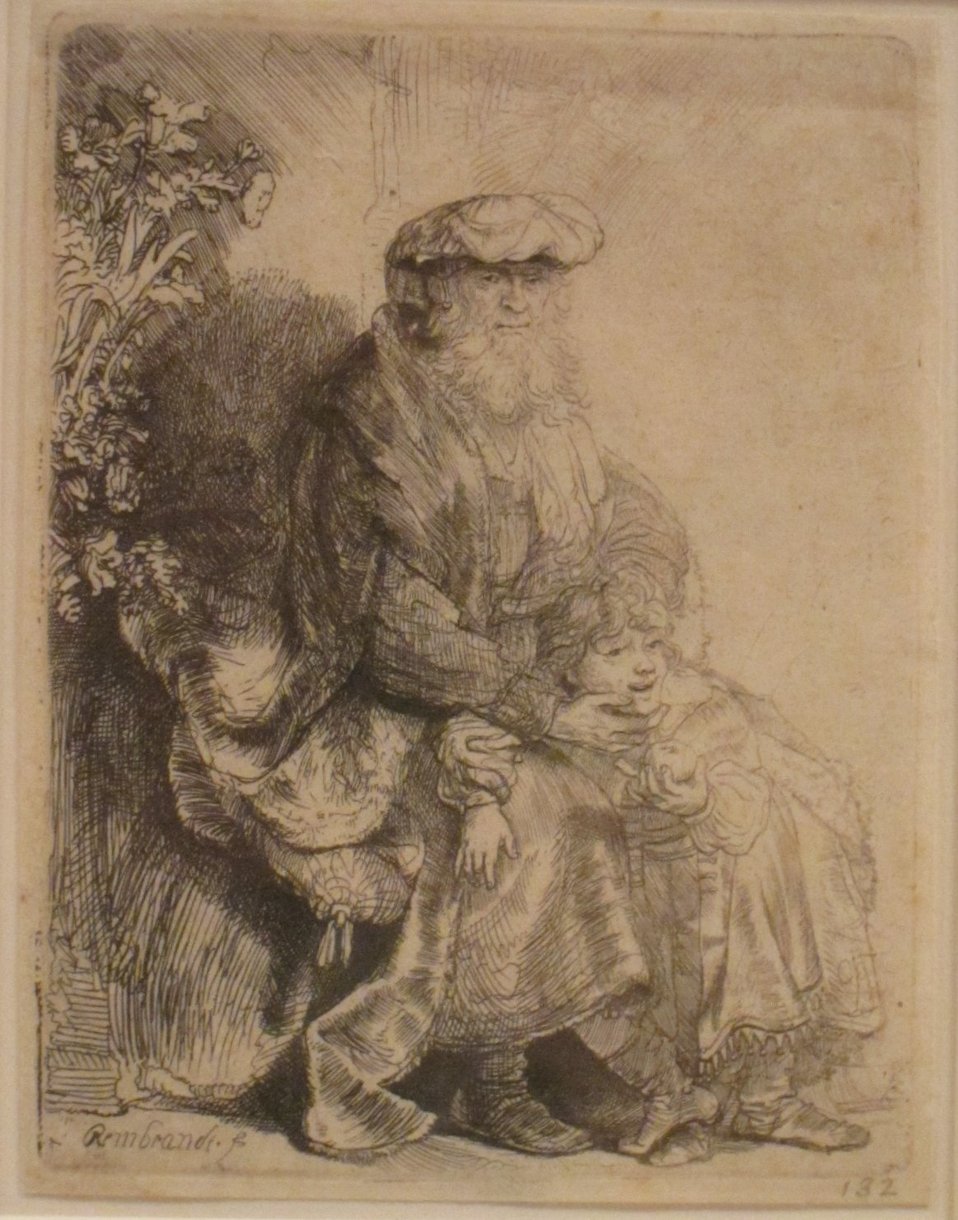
Abraham Caressing Isaac, etching by Rembrandt, c. 1637, Honolulu Museum of Art